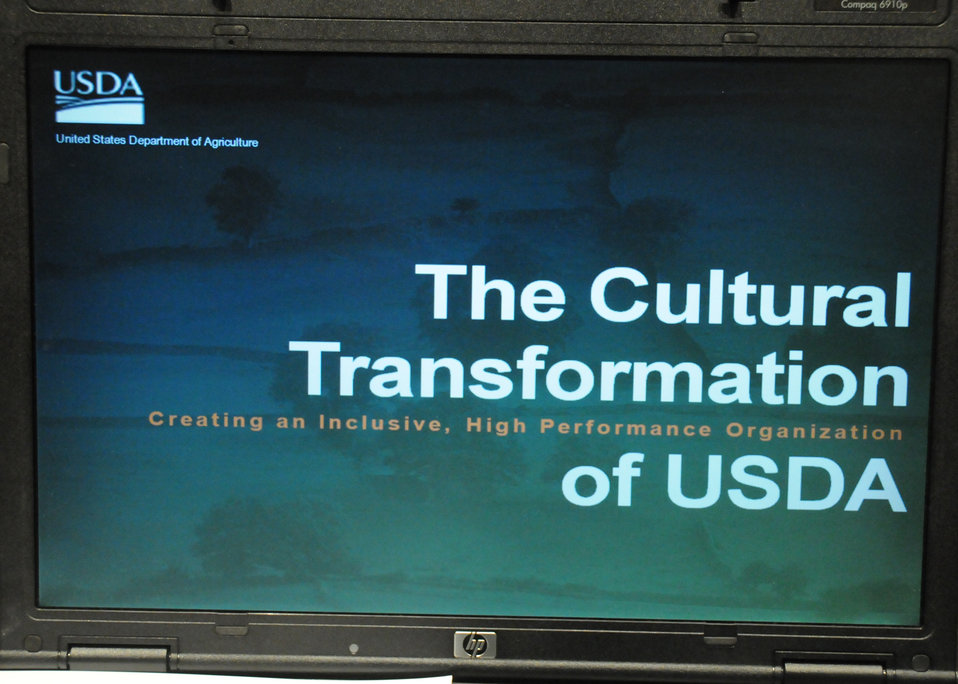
The U.S. Department of Agriculture (USDA) held the 3rd of six Cultural Transformation Employee listening sessions in Kansas City, MO, on Wednesday, April 14, 2010. USDA employees expressed their concerns with issues at the Department and made suggestions for correcting them and improving the image of USDA. USDA photo 10di1308-05.